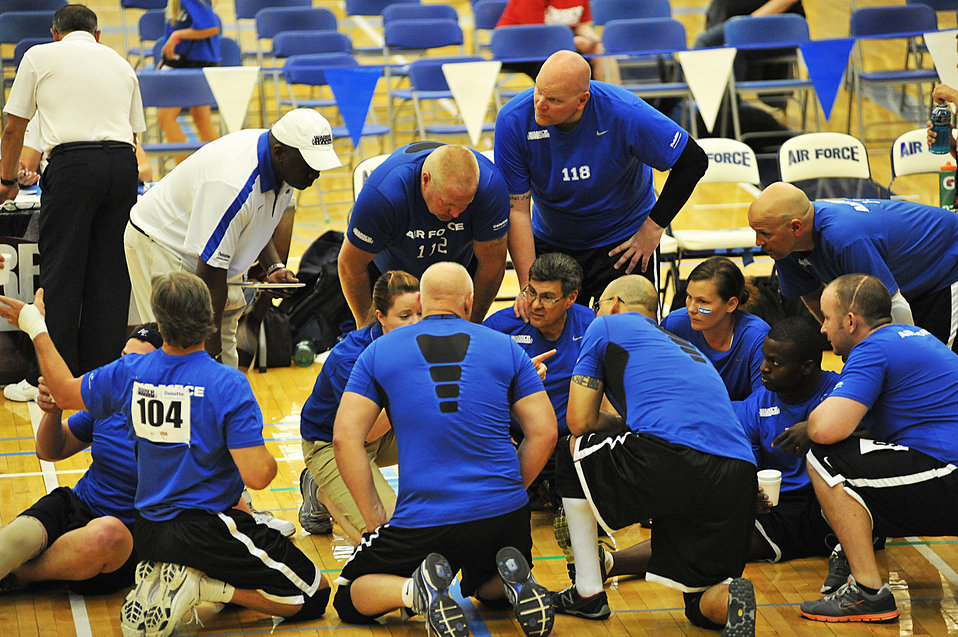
Warrior Games

Members of the Air Force sitting basketball team huddle during their bronze medal game against the Special Operations Command team during Warrior Games 2012 at the U.S. Air Force Academy in Colorado Springs, Colo., May 3, 2012. Air Force won by a score of 25-12 and 25-20.